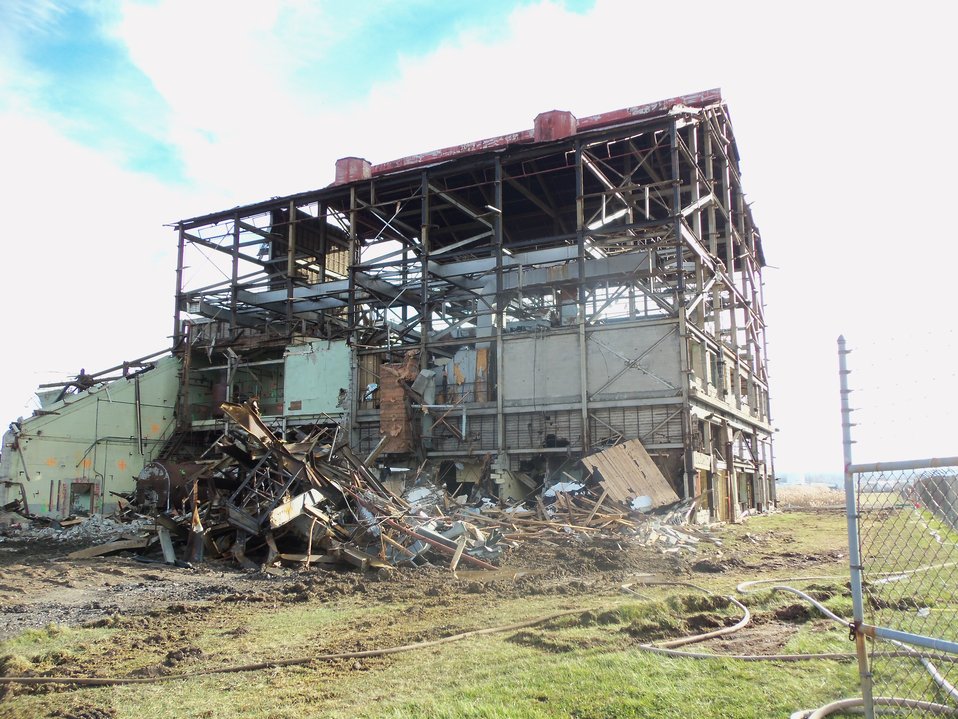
Building 401 closer shell picture.

Activities from the Niagara Falls Storage Site, which is associated with the former Lake Ontario Ordnance Works. Formerly Utilized Sites Remedial Action Program (FUSRAP), a program initiated in 1974 to identify, investigate and clean up or control sites that were part of the Nation's early atomic energy and weapons program. Activities at the sites that are eligible for FUSRAP were conducted by Manhattan Engineer District (MED) or the Atomic Energy Commission (AEC), both predecessors of the Department of Energy (DOE). The U.S. Army Corps of Engineers was assigned management of FUSRAP by Congress in 1997.